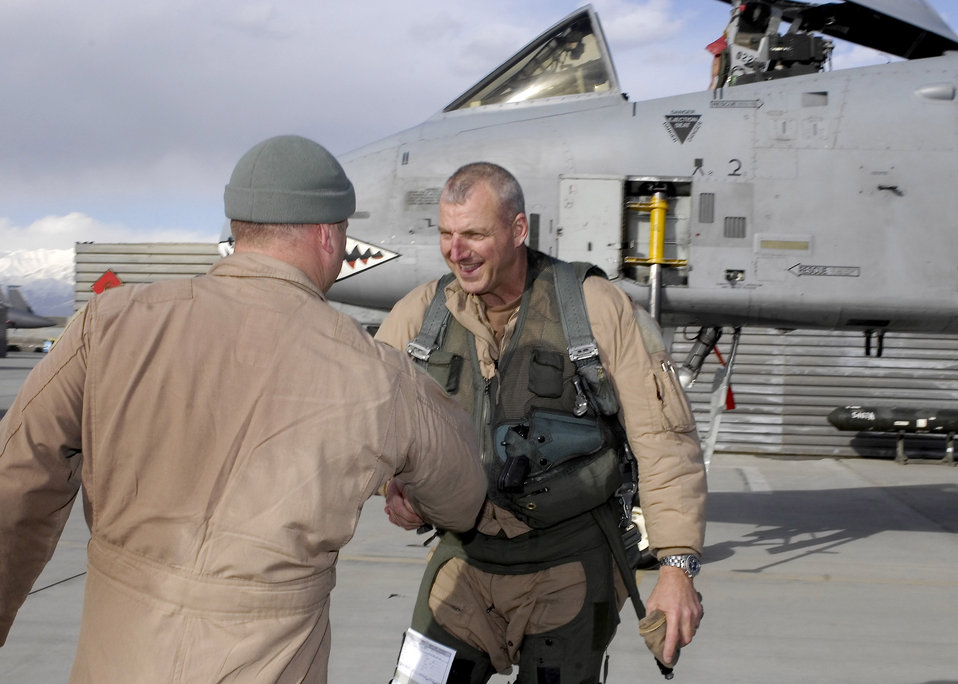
A-10 unit reaches 10,000-hour milestone

Lt. Col. Sam Milam shakes hands with Col. Raymond Strasburger after the pair completed a mission that logged more than 10,000 combat flight hours for the 75th Expeditionary Fighter Squadron in a single deployment Feb. 24 at Bagram Airfield, Afghanistan. Members of the 75th Expeditionary Fighter Squadron arrived here in September for a four-month deployment, but was extended to six months. Colonel Milam is the 75th EFS commander. Colonel Strasburger is the 455th Expeditionary Operations Group commander.